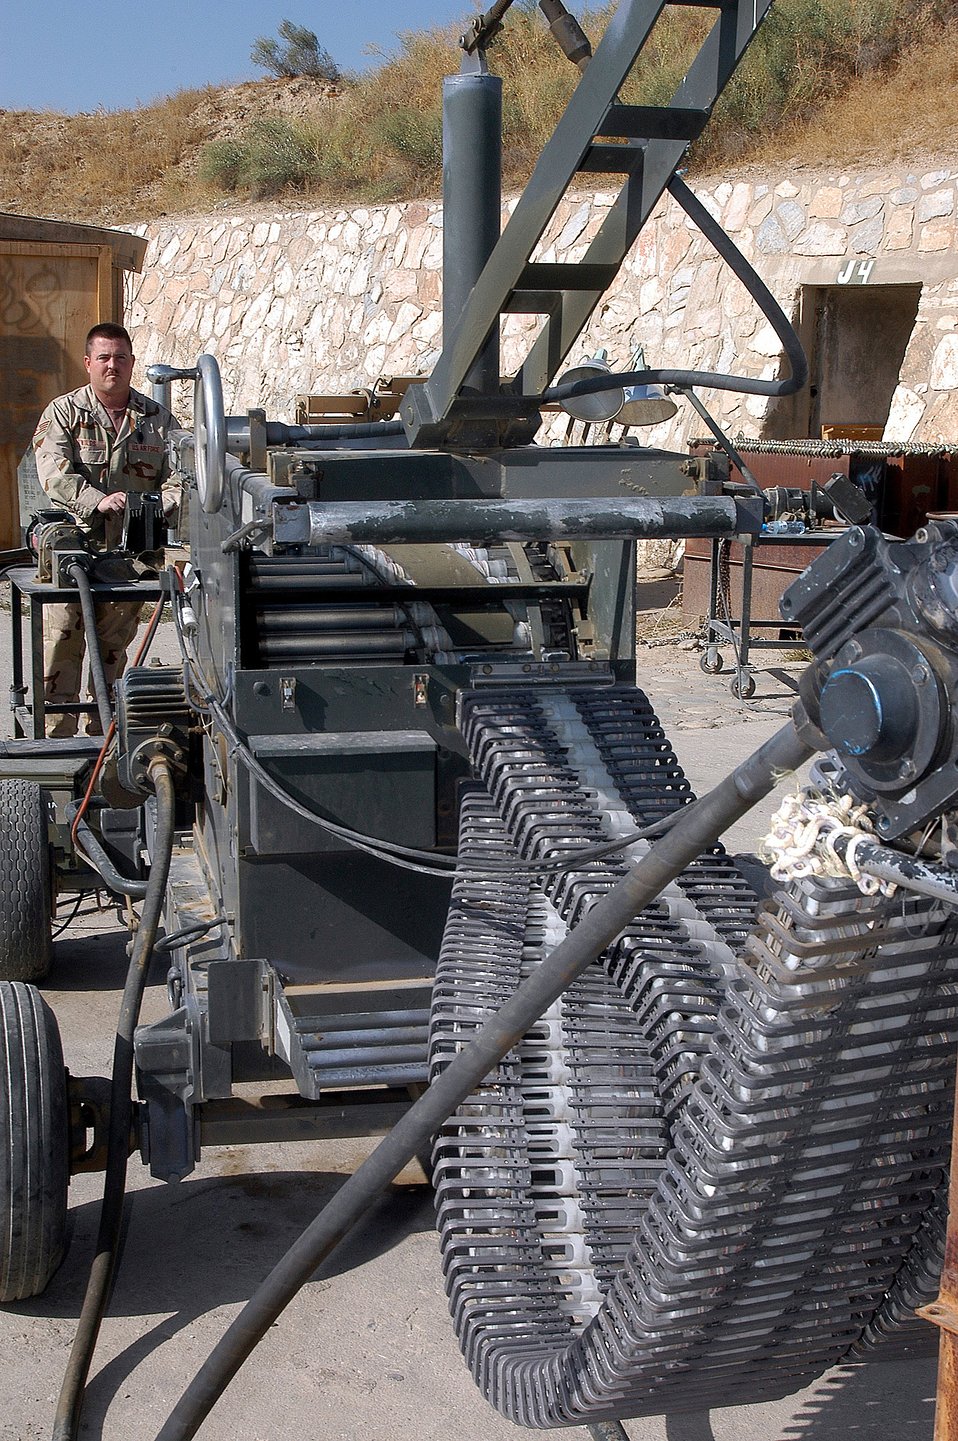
Feeding the Dragon

BAGRAM AIR FIELD, Afghanistan (AFPN) -- Tech. Sgt. Todd Wilds processes 30mm high-explosive cannon ammunition here using a GFU-7. The machine, sometimes referred to as the